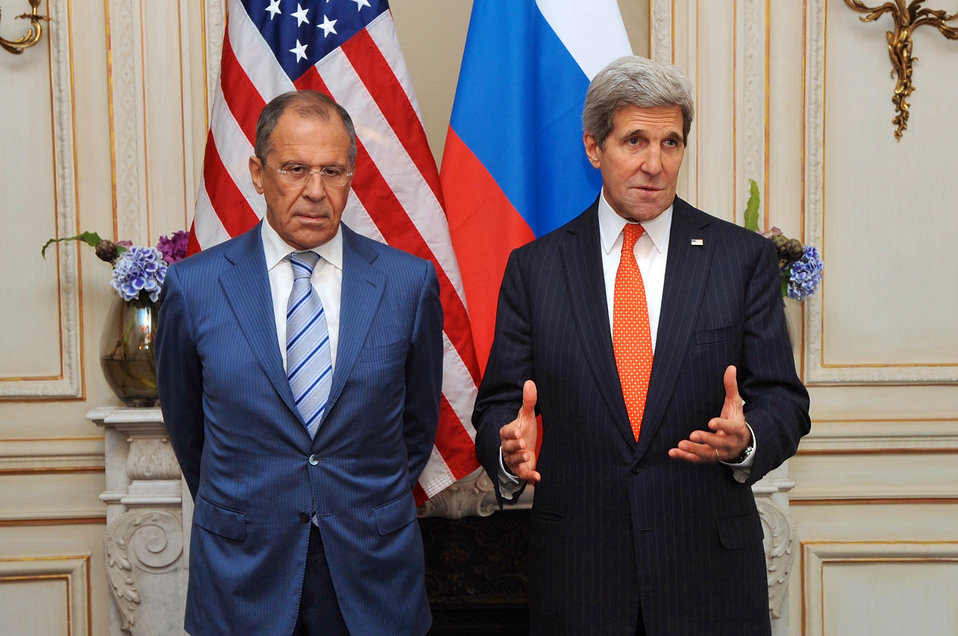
Secretary Kerry Addresses Press Before Meeting With Russian Foreign Minister Lavrov in Paris

U.S. Secretary of State John Kerry addresses reporters before a bilateral meeting with Russian Foreign Minister Sergey Lavrov in Paris, France, on June 5, 2014.